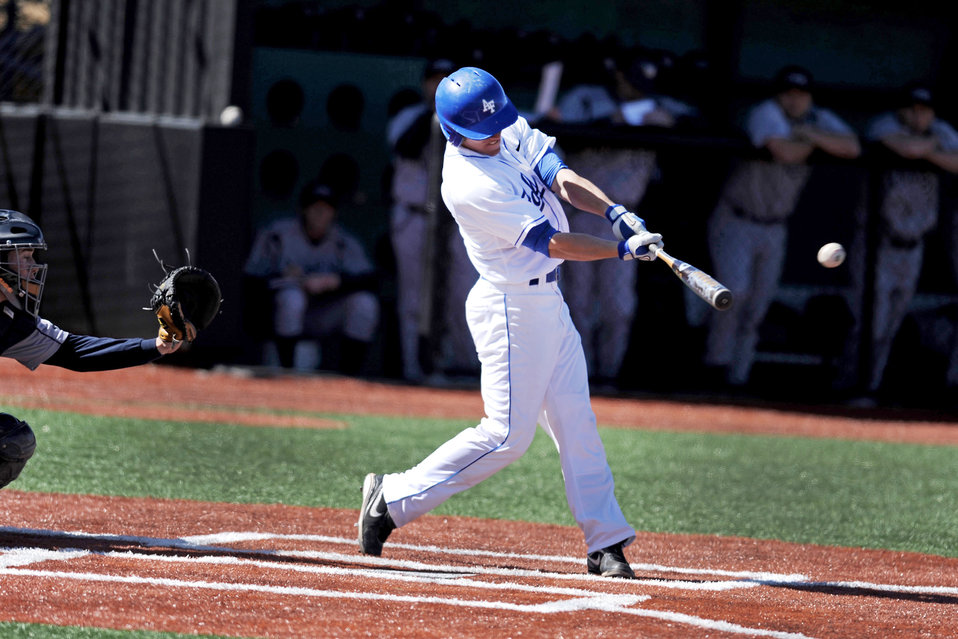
Falcons defeat Colorado School of Mines

Falcon freshmen Garrett Gustons connects with one of his three hits during play against Colorado School of Mines at U.S. Air Force Academy's Falcon Field in Colorado, March 16, 2010. Gustons had three RBIs in the 12-10 victory.